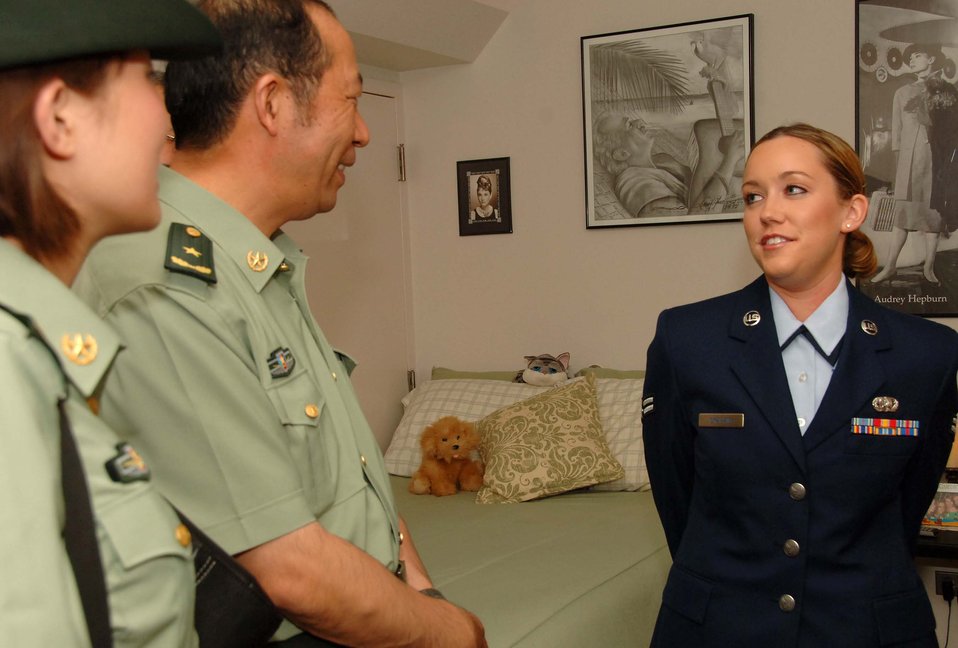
China military delegation visits Hickam AFB

Airman 1st Class Holly Graham provides a glimpse into Airman living conditions at Clay Hall dormitory to China's People Liberation Army Maj. Gen. Zhong Zhiming and his delegation. She showed the visitors her dorm amenities and answered questions about her portraits and military memorabilia in her room. The visit is part of a continuum of reciprocal exchanges between the United States and China and contributing to the steady progress of our military-to-military relationship-building activities. Airman Graham is assigned to the 15th Operational Support Squadron.